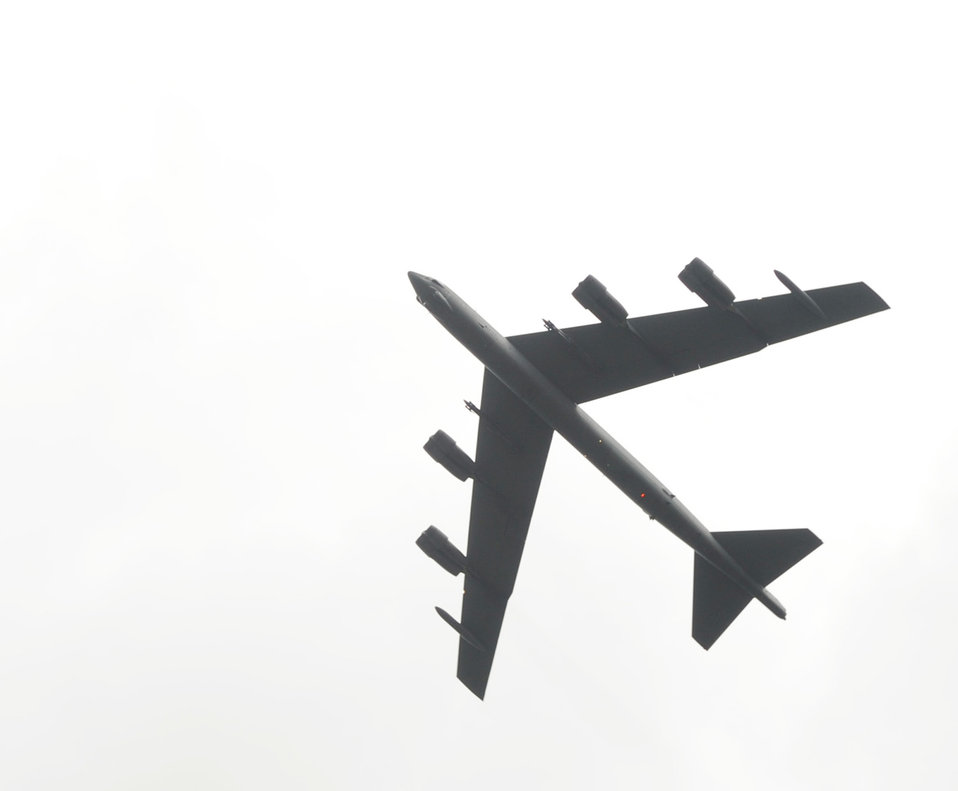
Remembering RAIDR 21

A B-52 Stratofortress flies over the RAIDR 21 Remembrance Ceremony held July 21 at Barksdale Air Force Base, La. More than 200 Airmen, friends and family members attended the ceremony to remember the six fallen aircrew members who died in a crash July 21, 2008, while deployed to Andersen AFB, Guam. The call-sign of their B-52 was RAIDR 21.